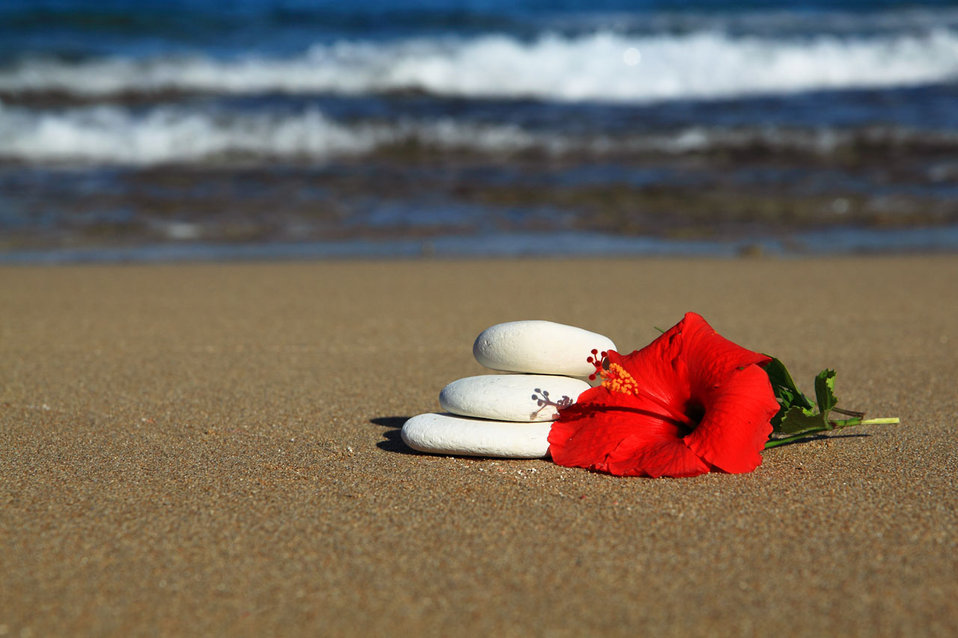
Stones and flower in sand

Pebbles and hibiscus flower in sand with ocean in background.